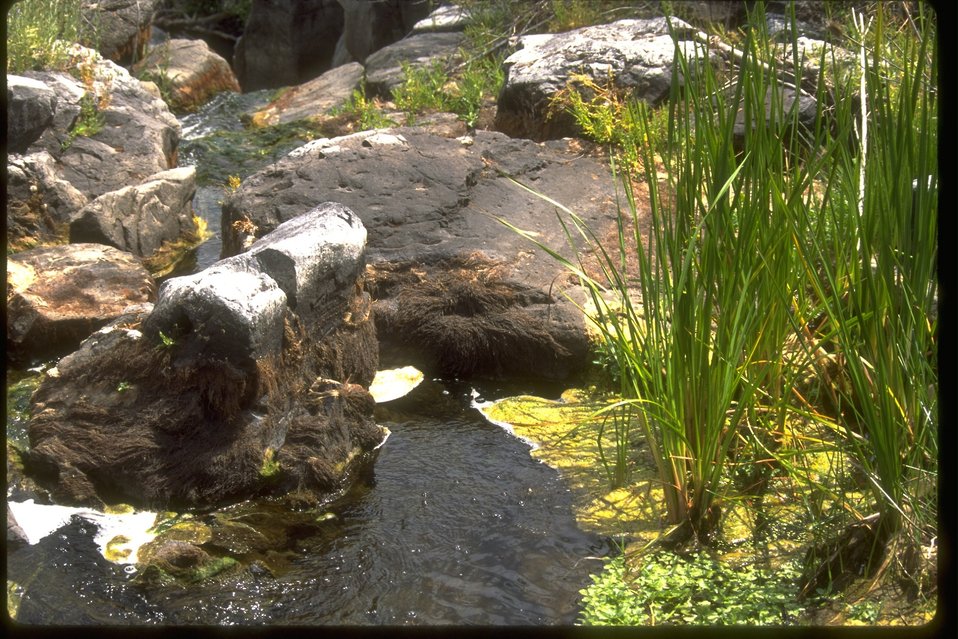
Creek in Twin Lakes Canyon, Lincoln County, Washington.